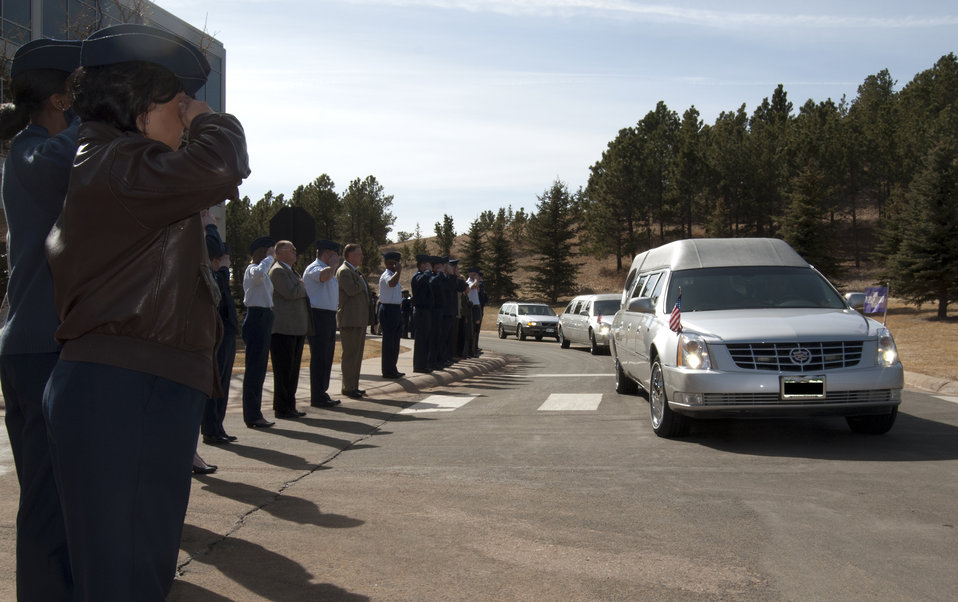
Fallen pilot 'has come home'

Airmen at the Air Force Academy render honors to Capt. Ryan Hall, who was interred at the Academy Cemetery in Colorado Springs, Colo., March 12, 2012. Hall, a native of Colorado Springs, was killed when his U-28A crashed Feb. 18. Hall was deployed to Djibouti in support of Operation Enduring Freedom.